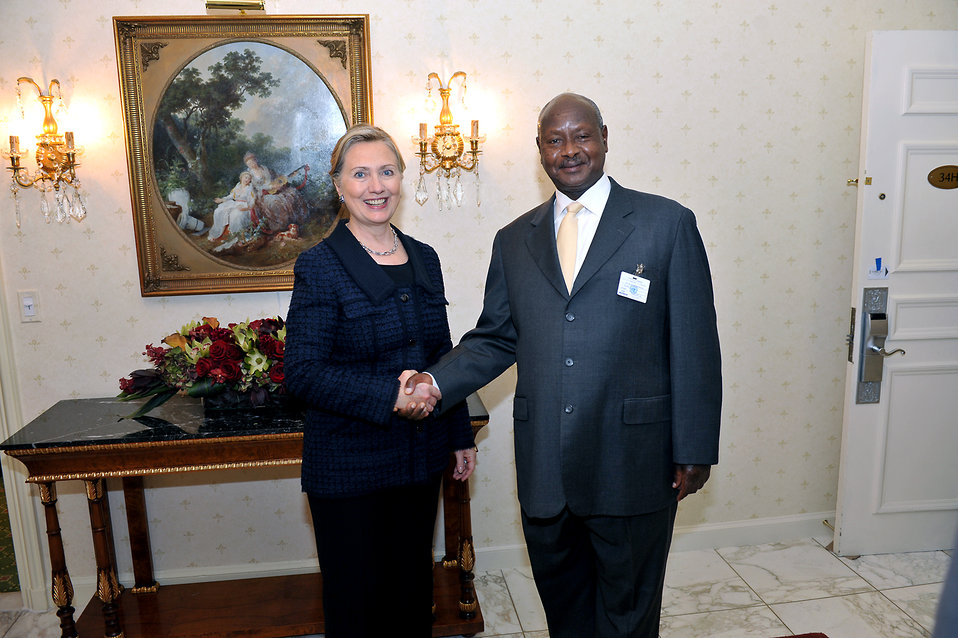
Secretary Clinton Shakes Hands With Ugandan President Museveni

U.S. Secretary of State Hillary Rodham Clinton shakes hands with Ugandan President Yoweri Museveni after their bilateral meeting at the Waldorf-Astoria Hotel in New York, New York, on September 24, 2010.